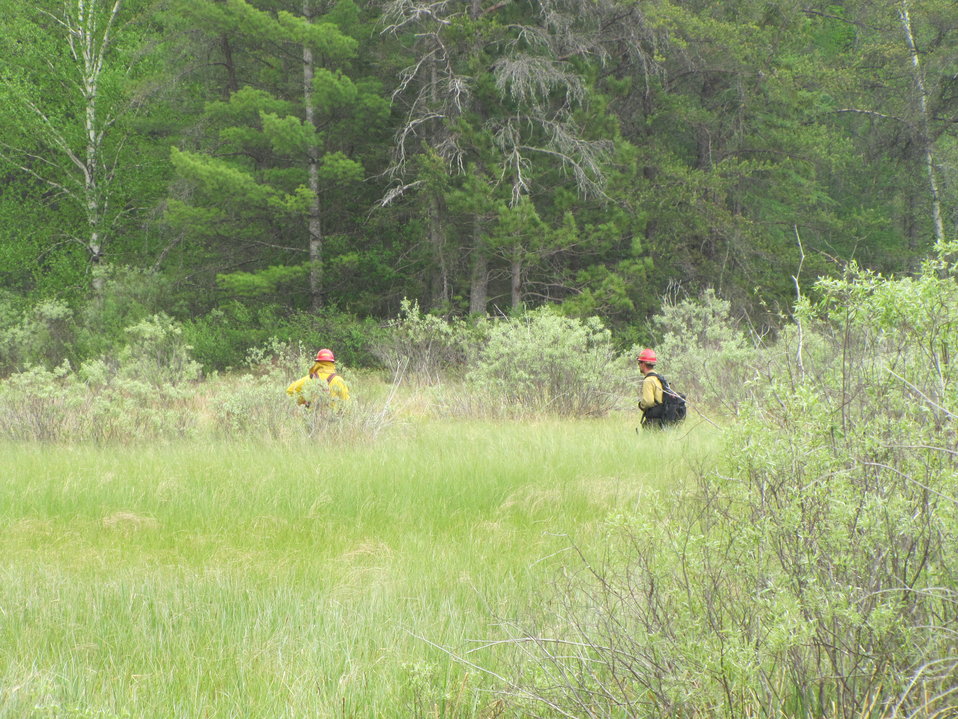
The Hand Crew in Action

Lighting a back fire off Pine Creek Road to keep the main fire contained.